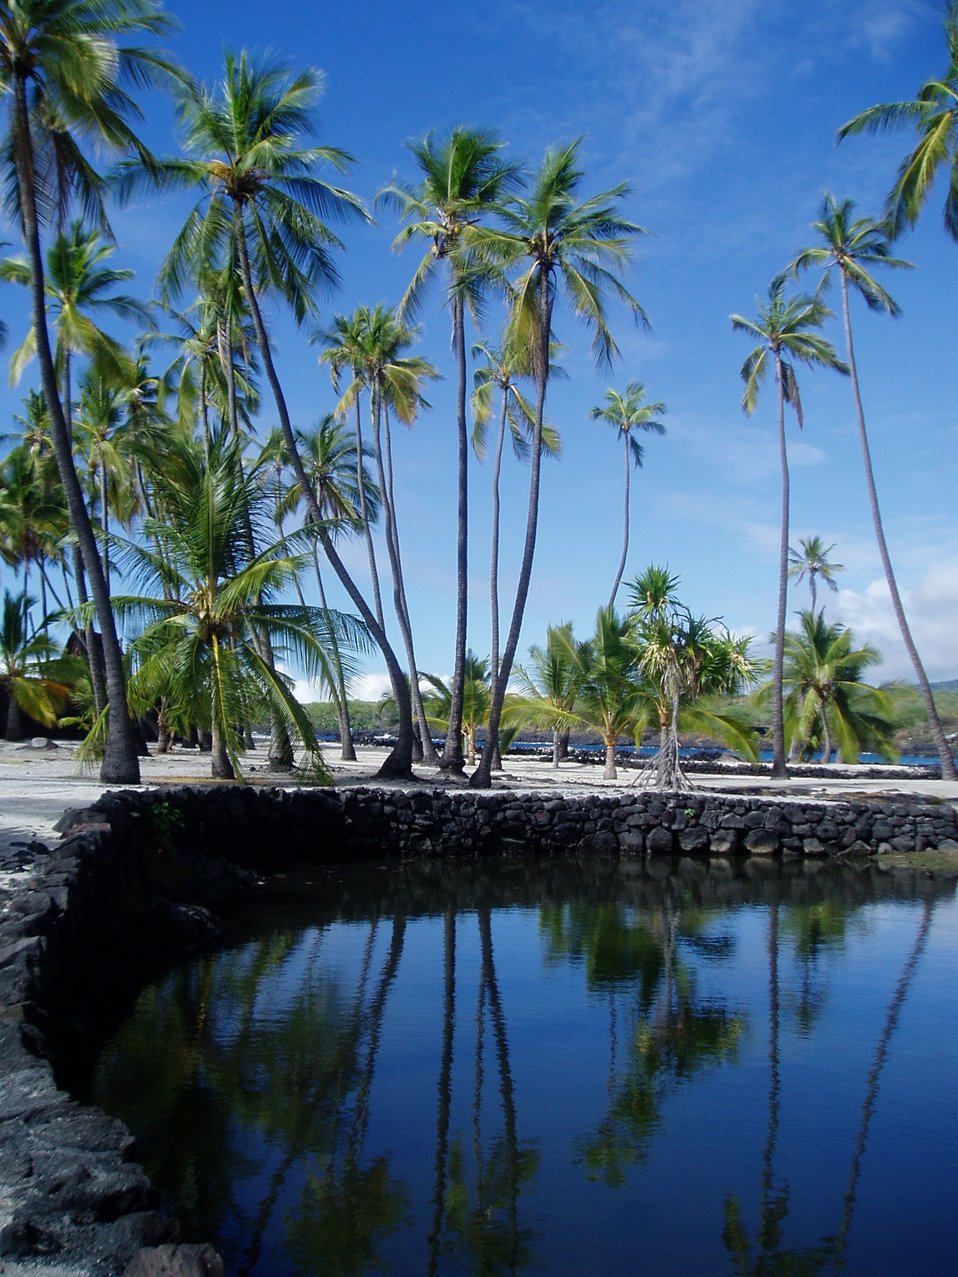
City of Refuge, Kona Coast.